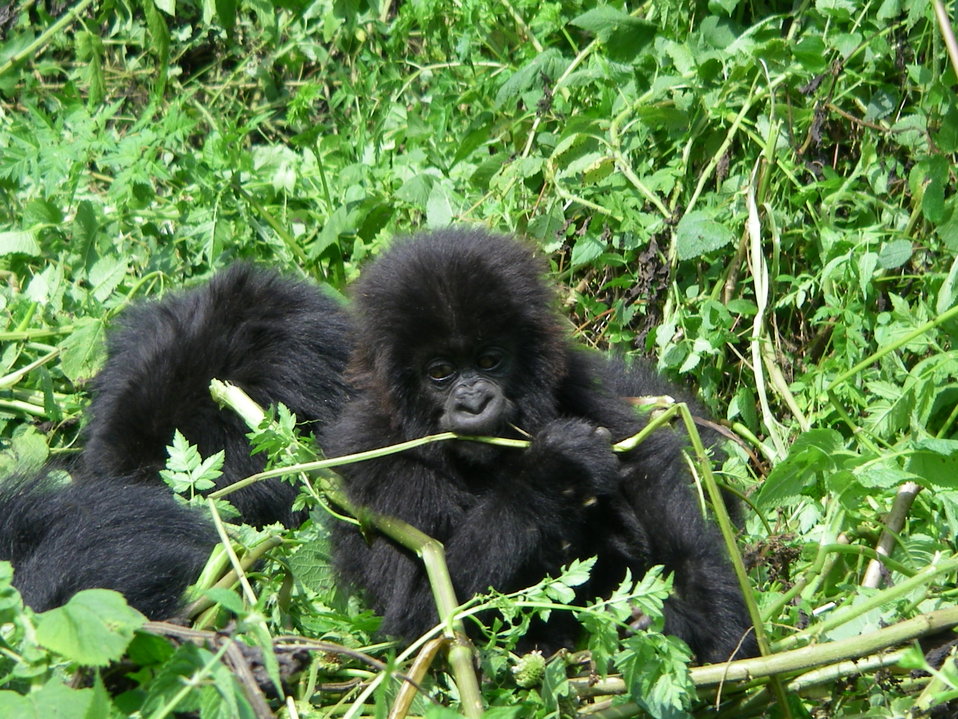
Young Mountain Gorilla